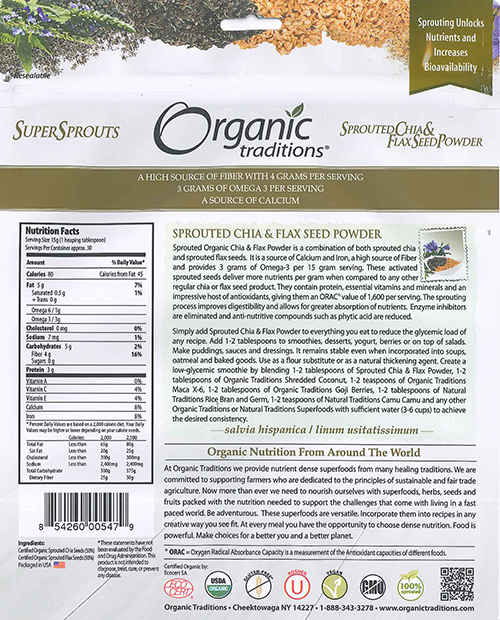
RECALLED – Chia and Flax seed powder

June 4, 2014 – Product Recall – Health Matters America, Inc, Recalls Organic Sprouted Chia Seed Powder and Sprouted Chia/flax Seed Powder Due to Possible Health Risk.